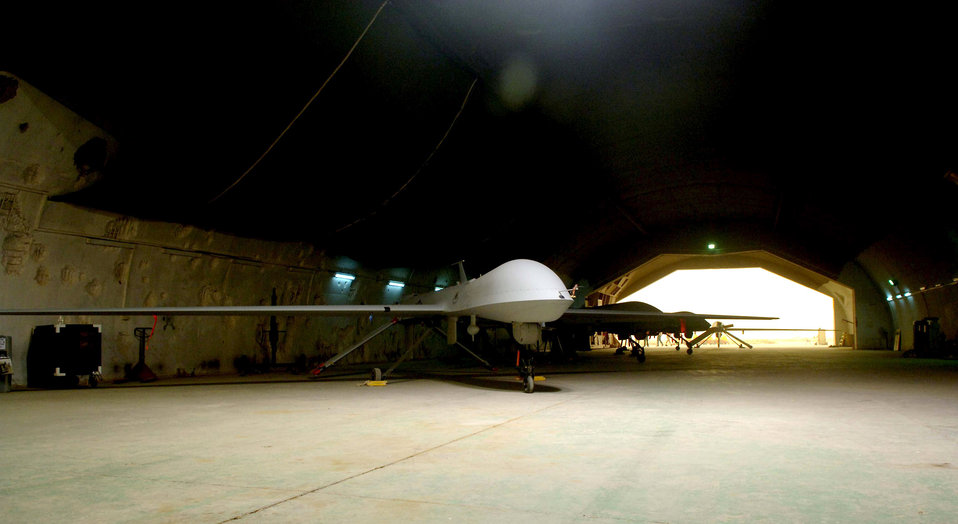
Airpower Summary for May 29, 2007

An MQ-1 Predator unmanned aerial vehicle sits in its hangar at Balad Air Base, Iraq, May 17 awaiting its next mission. The Predator provides armed reconnaissance, airborne surveillance and target acquisition for Operation Iraqi Freedom and Operation Enduring Freedom.